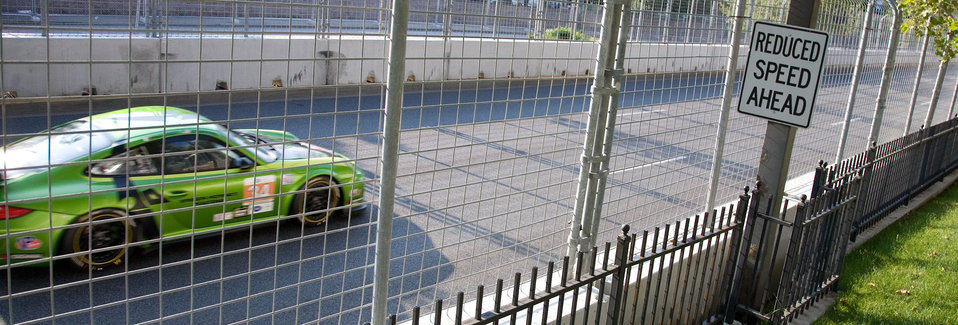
Porsche GT3 race cars (GT Challenge class) of the the American Le Mans Series (ALMS) motorsport challenge practice for thier race, during the Baltimore Grand Prix, on the streets of downtown Baltimore, MD on Friday, August 31, 2012, Labor Day Weekend. ALMS says they are “the Global Leader in Green Racing by being the only racing series recognized to comply with the Green Racing protocols developed by the U.S. Department of Energy (DOE), the U.S. Environmental Protection Agency (EPA) and Society of American Engineers International (SAE).” Instead of high-octane gasoline all the cars in the series uses one of 5 different forms of energy (system). Clean diesel, E85, E10, isobutanol or hybrid energy technology. The specific hybrid system, used by the Porsche GT3 cars, are a (battery-less) flywheel-based Kinetic Energy Recovery Systems. These organizations are accelerating technology development at speeds up to 200 mph, in 650-700 horsepower race cars that are based on two groups of cars; the purpose built prototype race cars and the GT ( Grand Touring) cars based on production sports cars that you can see in showrooms. From these groups, there are five classes of cars, all of which race at the same time during the race events.
The U.S. Department of Agriculture (USDA) focuses on renewable fuel sources that are profitable and sustainable. 2011 accomplishments include research and planning for renewable energy and investments in renewable energy production.
- Completed a Biofuels Roadmap proposing a plan of action to meet congressionally mandated RFS2 goals for national biofuels production.
-Coordinated five regional research centers to work on the science necessary to ensure profitable biofuels can be produced from a diverse range of feedstocks across the nation, not just in the Midwest where the industry is already thriving.
-Over three years, USDA invested about $320 million to accelerate research on renewable energy ranging from genomic research on bioenergy feedstock crops, to development of biofuel conversion processes and costs/benefit estimates of renewable energy production.
- More than 130 biodiesel and ethanol projects funded by USDA are currently producing almost 3.7 billion gallons of biodiesel and ethanol annually, enough fuel – in equivalence to gasoline – to keep five million vehicles on the road every year.
-We are supporting efforts to build five biorefineries to produce advanced biofuels in states from Florida and Michigan to New Mexico, with investments worth about $310 million. We are supporting facility upgrades and feasibility studies for advanced biofuels projects in every region of the country.